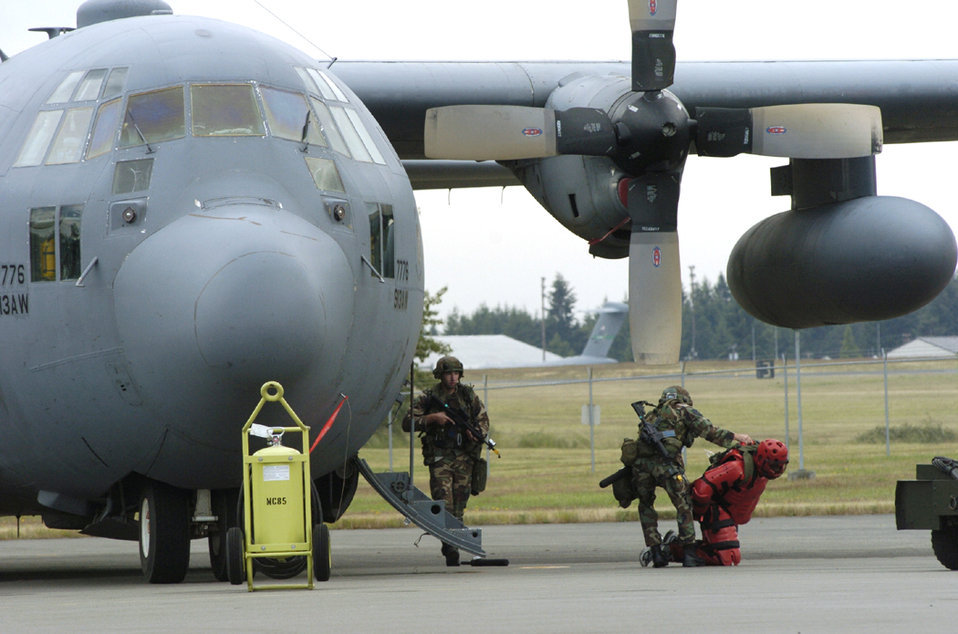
A day at the Rodeo

MCCHORD AIR FORCE BASE, Wash. -- Airman 1st Class Joseph Tonchetto (left) provides backup as Tech. Sgt. Robert Rose subdues a mock protestor June 21 during the combat tactics competition at Rodeo 2005 here. During the event, two-person security forces teams faced several different scenarios while guarding an aircraft.